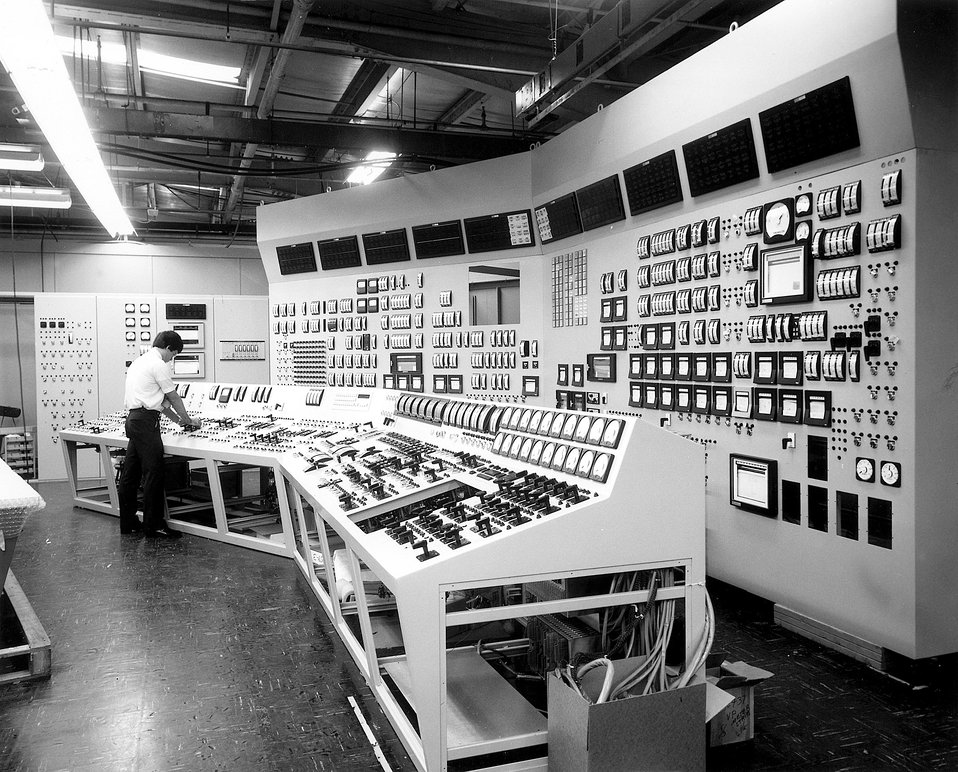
One year into construction, the PWR control room simulator being built for VEPCO by EAI is expected to be in operation at VEPCO's Surry Station next year.